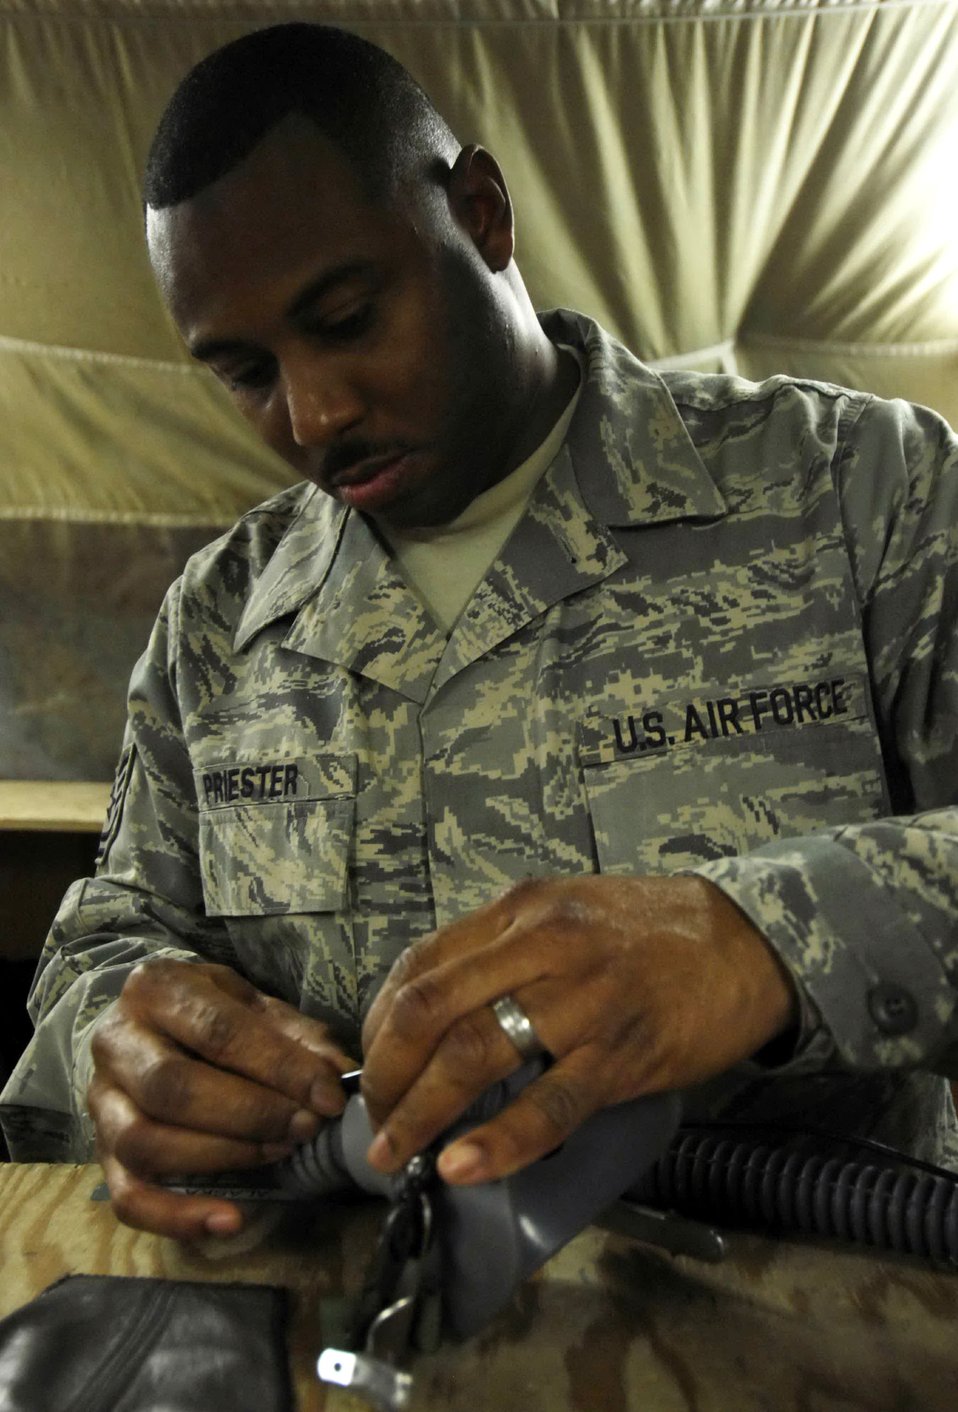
Checking equipment for life

Tech. Sgt. Will Priester performs a routine check on the equipment used by aircrew members Dec. 12 at Bagram Air Base, Afghanistan. Sergeant Priester is an 774th Expeditionary Airlift Squadron aircrew life support technician.